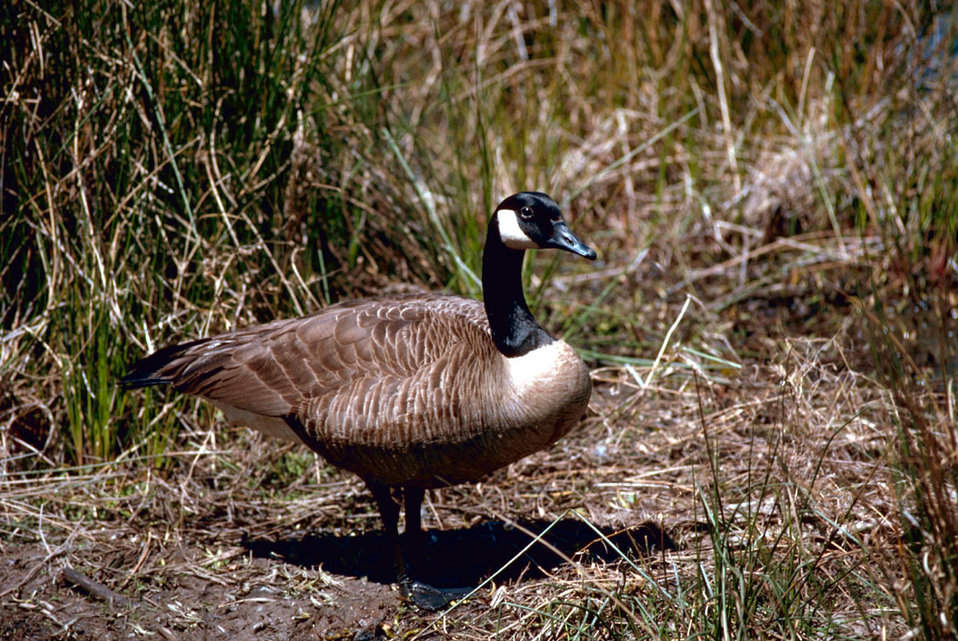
Canada goose

Close view of a Canada goose.